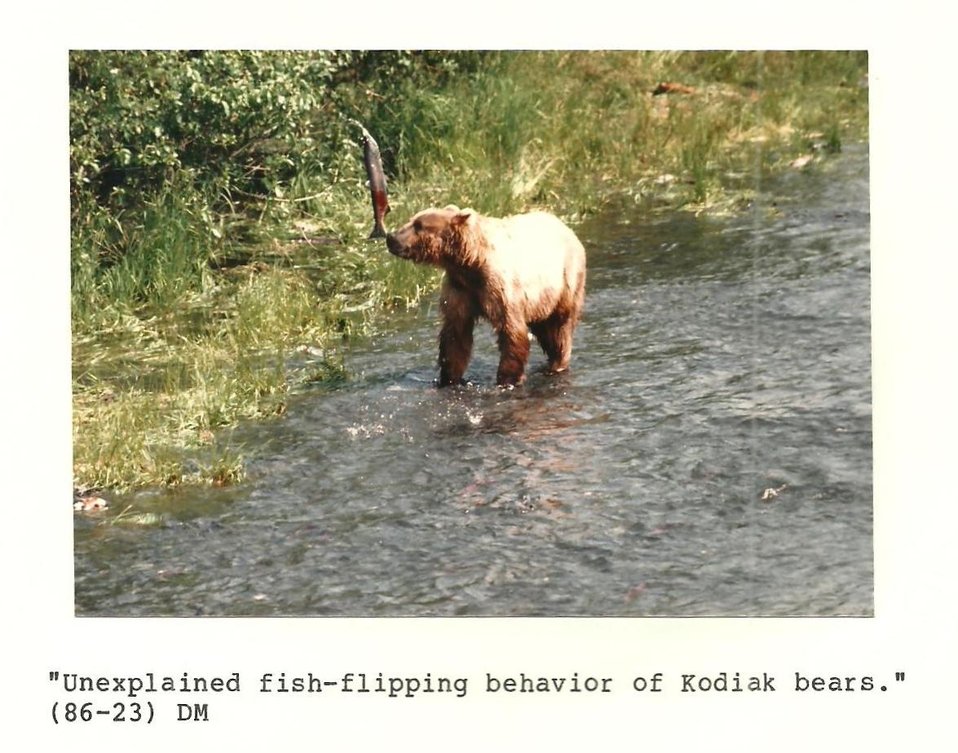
(1986) Unexplained Fish Flipping

Credit: USFWS

Source and Contact: Kodiak National Wildlife Refuge